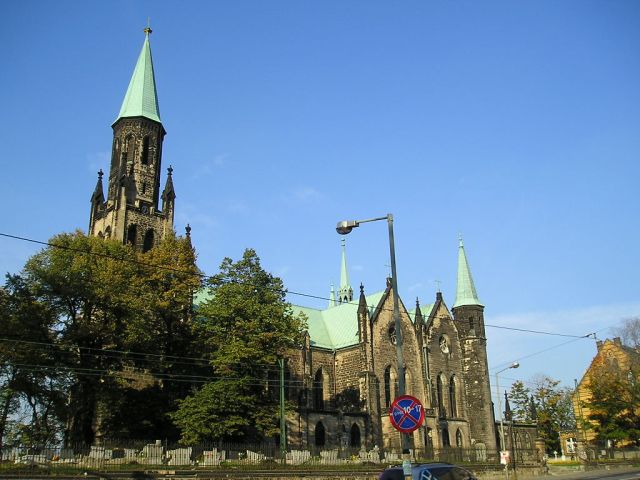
07-barbara-chorzow